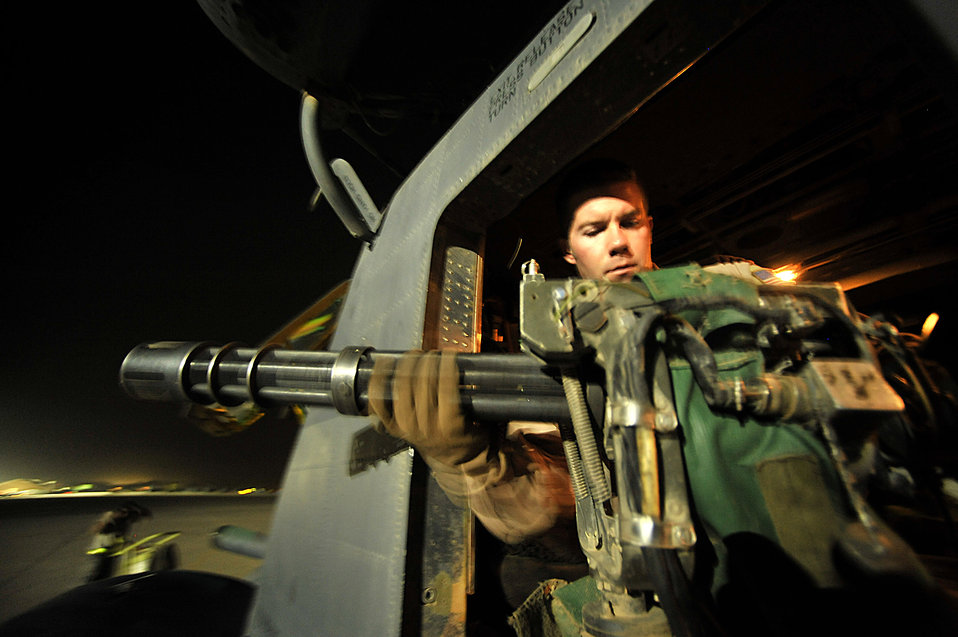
MH-53s fly final combat missions

Tech. Sgt. Corey Fossbender checks a weapon gun prior to the last combat mission of the MH-53 Pave Low helicopter Sept. 27 in Iraq. The MH-53 is being retired after nearly 40 years of service to the Air Force. Sergeant Fossbender is an MH-53 aerial gunner from the 20th Expeditionary Special Operations Squadron.